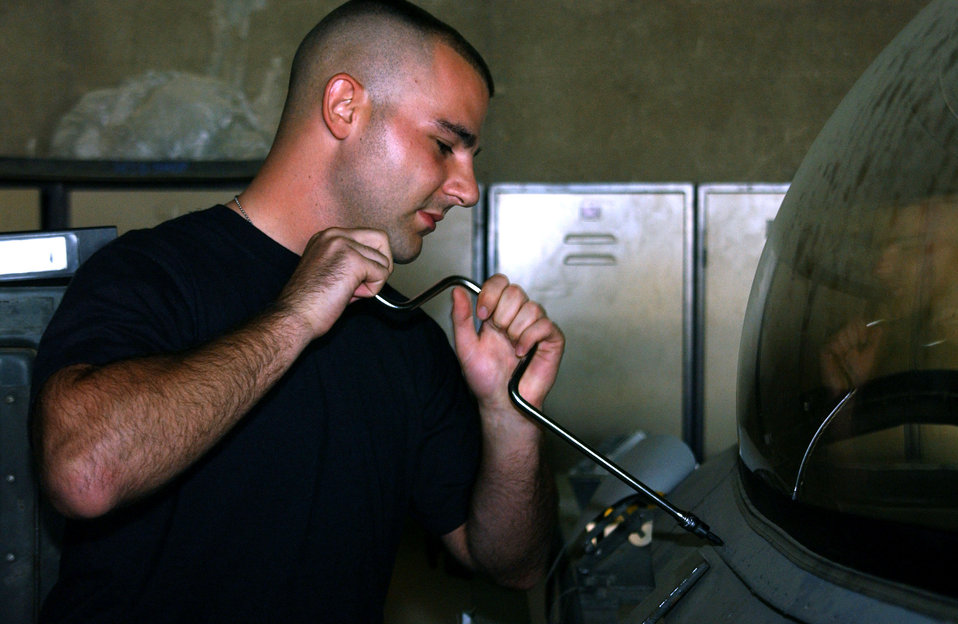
Egress maintainers give pilots a sense of security

Senior Airman Mike Fire tightens a screw to an F-16 Fighting Falcon canopy Oct. 10 at Balad Air Base, Iraq. Airman Fire is assigned a 332nd Expeditionary Maintenance Squadron aircrew egress systems craftsman deployed from Hancock Field Air National Guard Base in Syracuse, N.Y.